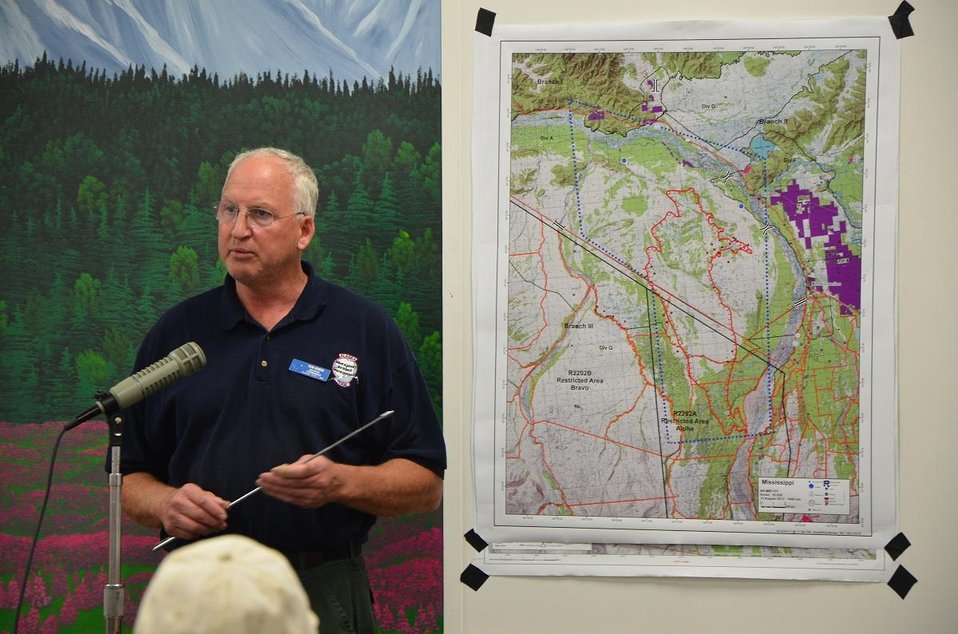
Incident Commander Tom Kurth holds a public meeting to keep local residents informed on the progress of the Mississippi Fire. The Mississippi Fire near Delta, AK began on May 30, 2013 by human interference has consumed approximately 40,000 acres.